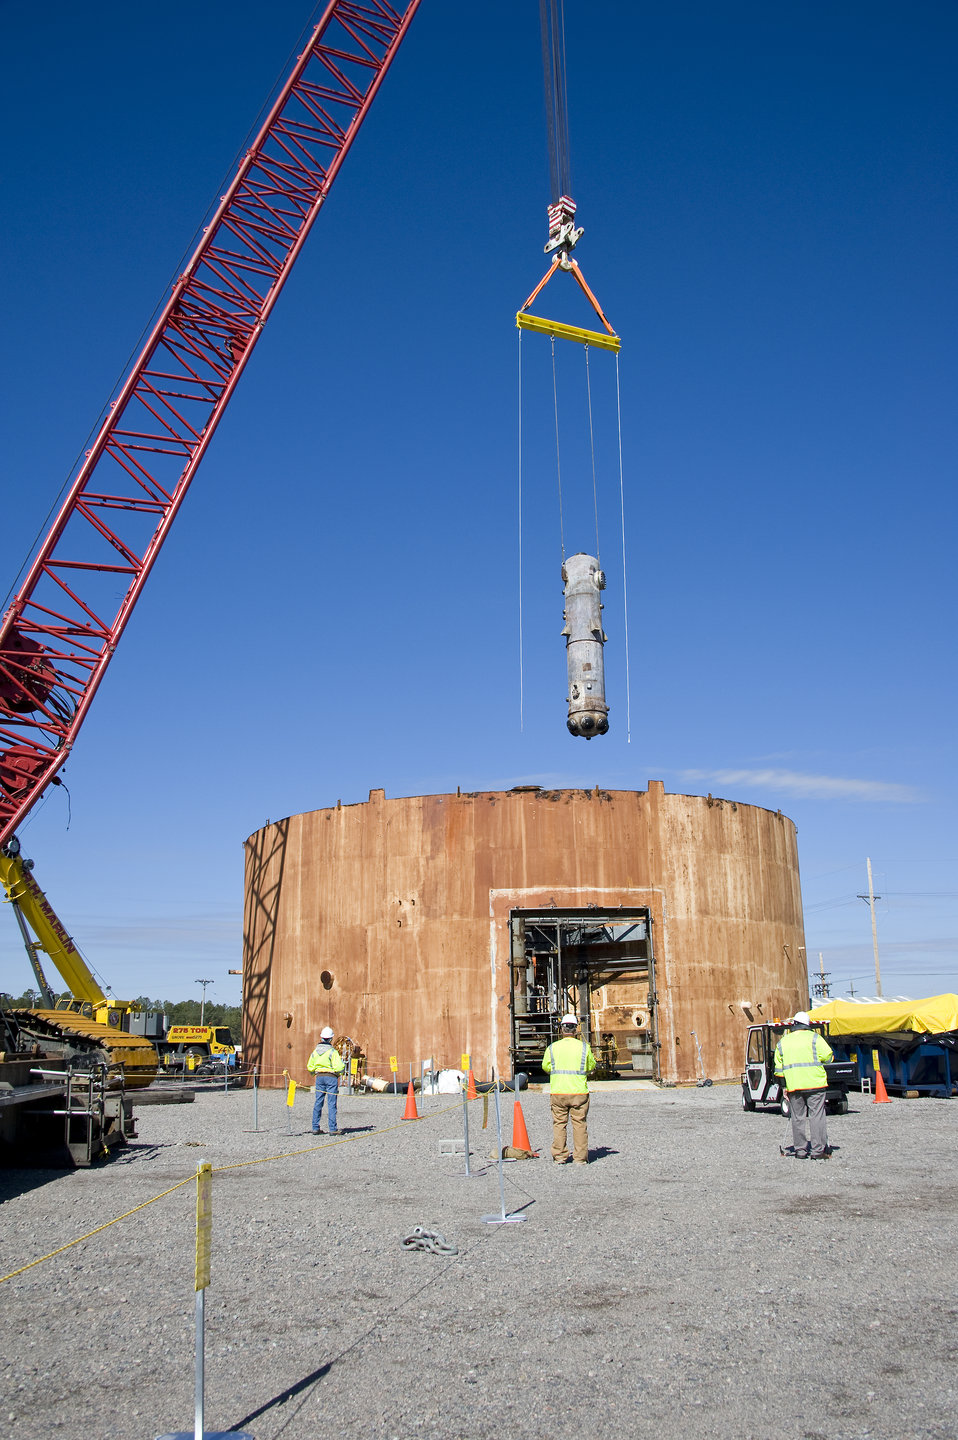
HWCTR steam generator

Work is under way to decommission the Heavy Water Components Test Reactor, which had been used to test experimental fuel assemblies for commercial heavy-water power reactors. SRS is scheduled to remove the dome of the reactor this month (January 2011). Workers also will displace the reactor vessel and steam generators, grout the remaining structure in place, and install a concrete cover over the reactor’s footprint.